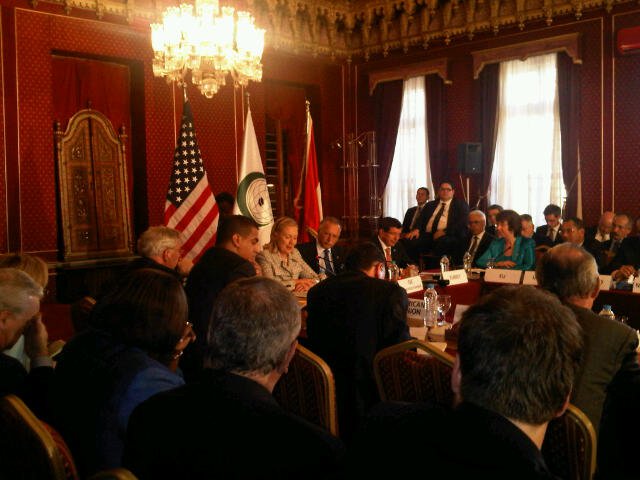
Secretary Clinton Speaks at the Organization of the Islamic Cooperation (OIC)

U.S. Secretary of State Hillary Rodham Clinton gives a speech discussing a religious tolerance agreement between the West and Islamic countries while at the Organization of the Islamic Cooperation (OIC) in Istanbul, Turkey, on July 15, 2011.